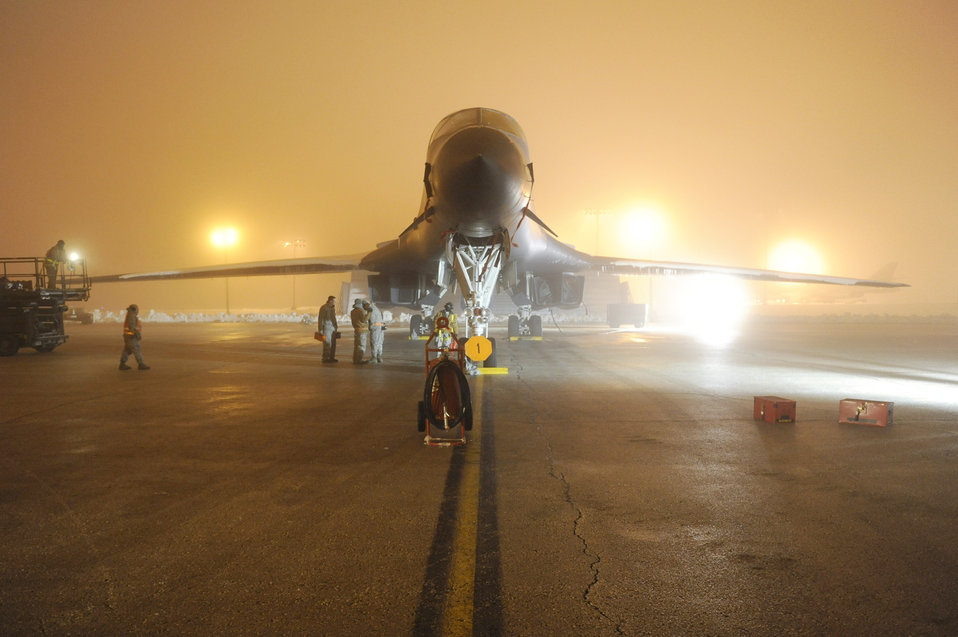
Preparing B-1B for mission

A B-1B Lancer takes off from Ellsworth Air Force Base, S.D., March 27, 2011, on a mission in support of Operation Odyssey Dawn.